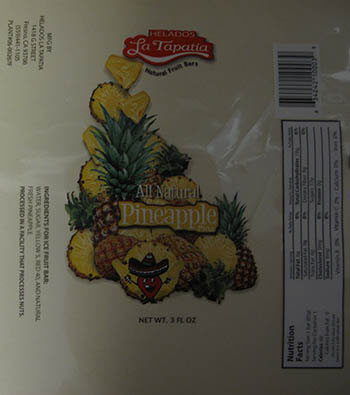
RECALLED – Ice cream products

March 19, 2014 – Product Recall – Helados La Tapatia, Inc. Recalls Products Because of Possible Health Risk.